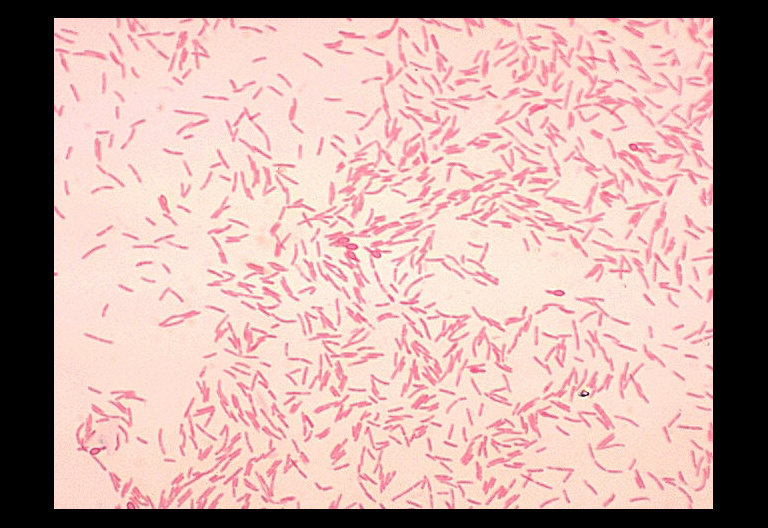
Bacillus circulans showing spores. Gram stain.